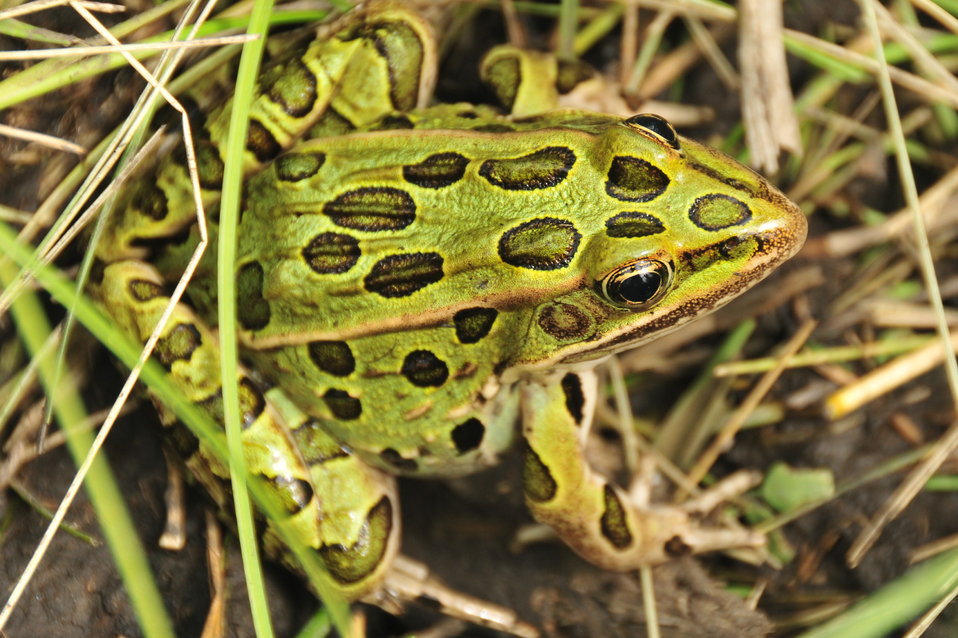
Leopard Frog Closeup

A leopard frog in a South Dakota seasonal wetland.